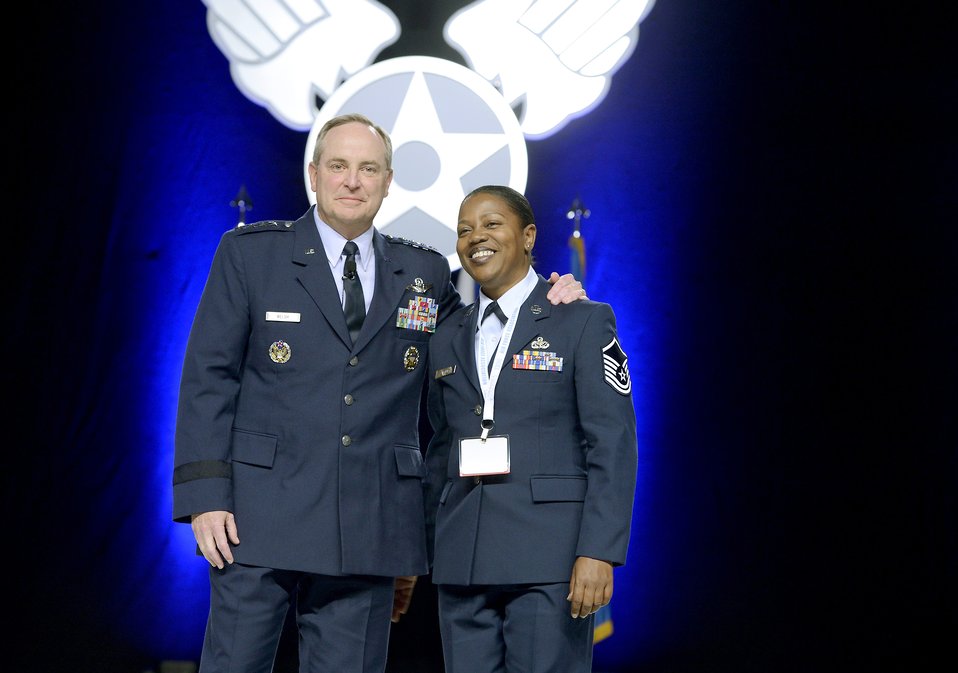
CSAF talks Air Force innovation, evolution at AFA Conference

Air Force Chief of Staff Gen. Mark A. Welsh III recognizes Master Sgt. Toni Worthey for her leadership and efforts as a noncommissioned officer in charge at Air Force Mortuary Affairs Operations at Dover Air Force Base, Del., during his keynote presentation on the state of the Air Force at the Air Force Association's Air and Space Conference and Technology Exposition in Washington, D.C., Sept. 18, 2012.